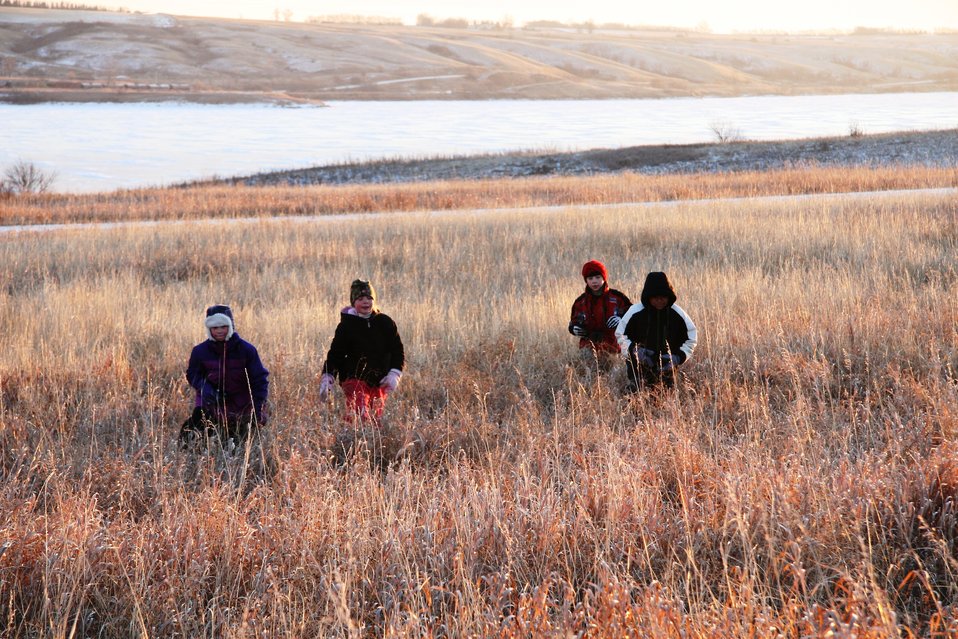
Hiking in the mixed grass prairie

Some of the participants making their way back to the trees.